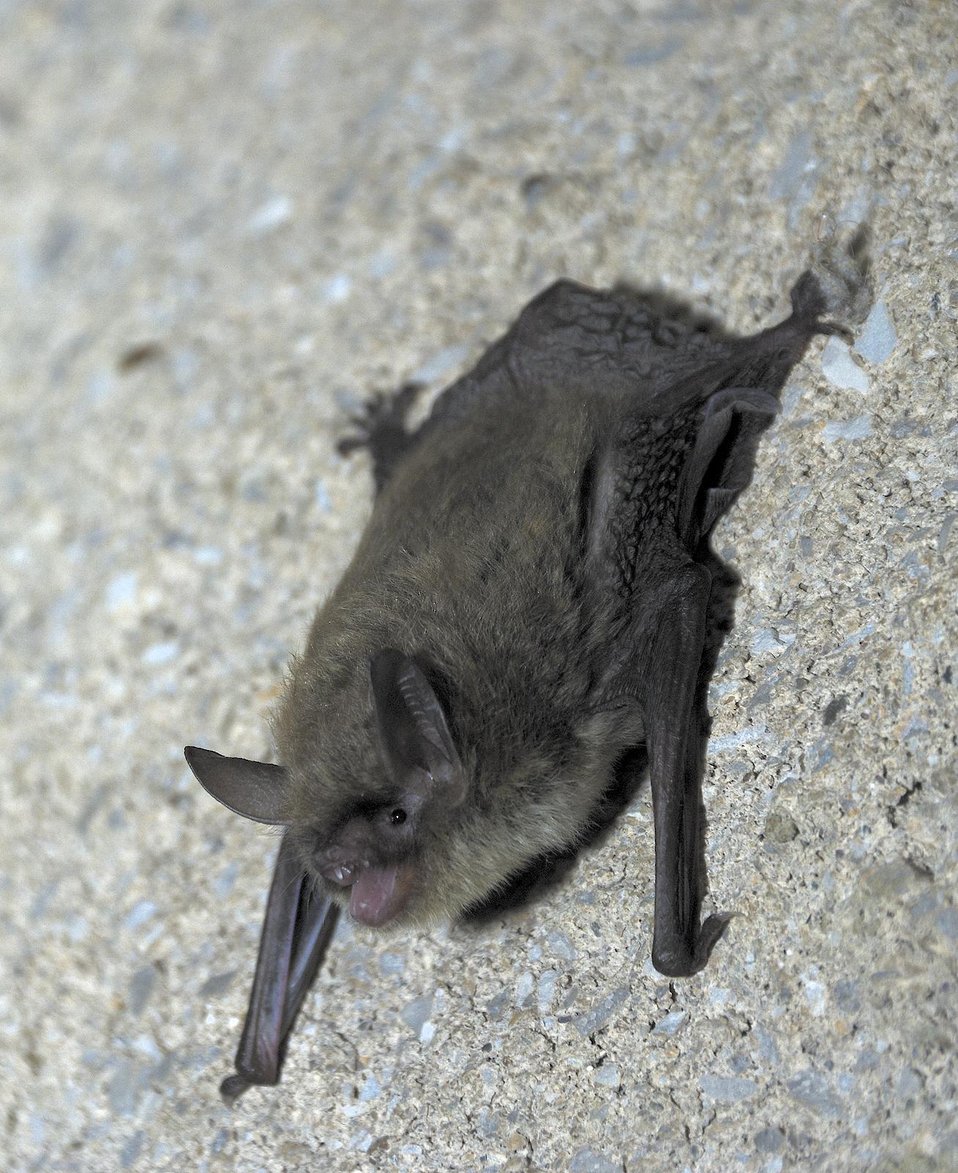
Ralph Arwood Collection #24

Bats like this northern long-eared bat are important to agricultural and forest ecosystems and are a significant force in keeping insect populations in check.